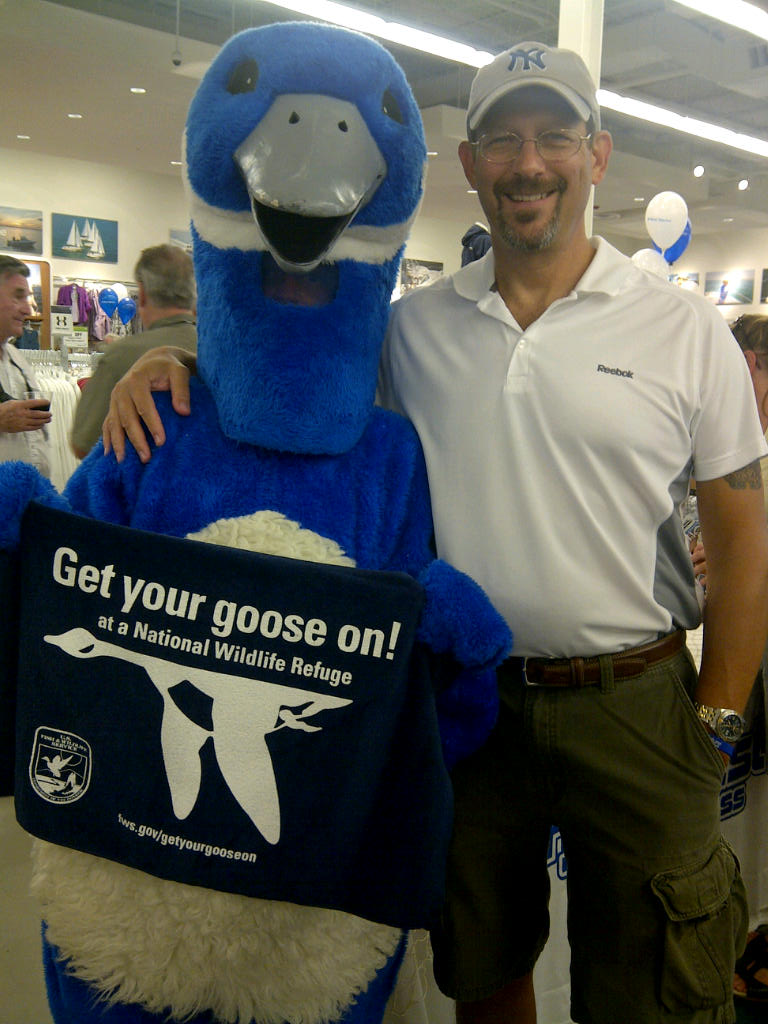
Get Your Goose On!